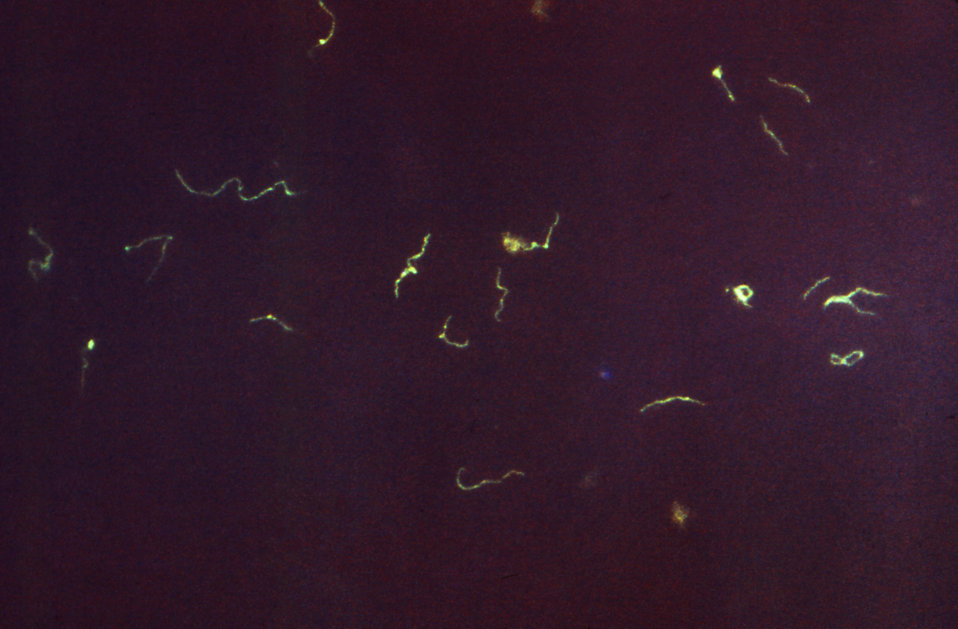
Using ultraviolet (UV) illumination, and using the oil-immersion technique with a magnification of 675X, this photomicrograph reveals the presence of numerous Treponema pallidum spirochetes. Using the indirect fluorescent antibody (FA) staining method, the specimen had been treated for 3 minutes with Fluorescent Treponemal Antibody (FTA) Antigen, which made these bacteria glow under UV illumination.